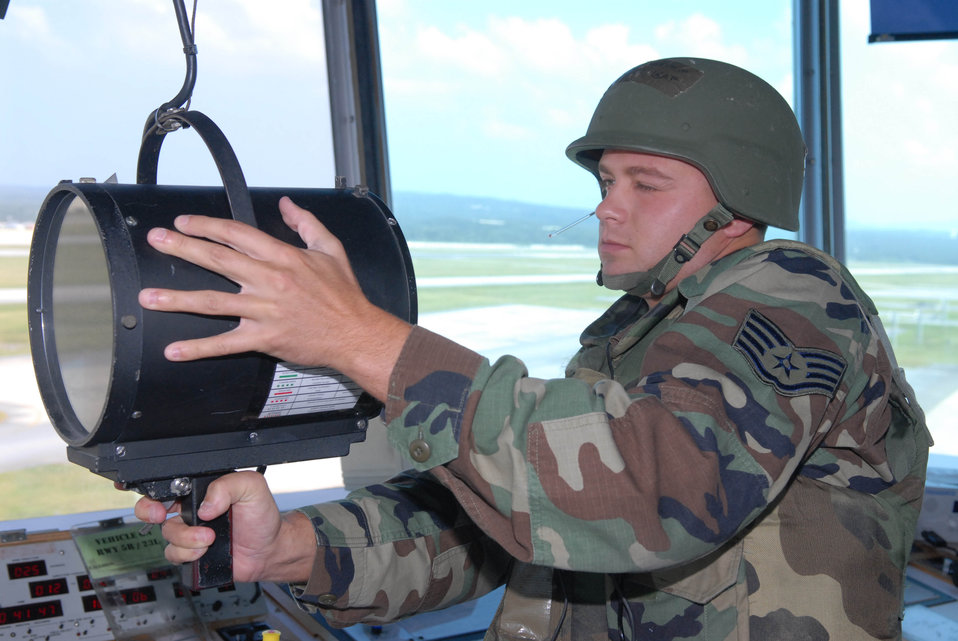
Testing the tower

Staff Sgt. Davis Christopher flashes a light gun signal from the air traffic control tower to approaching aircraft during an exercise Oct. 17 at Kadena Air Base, Japan. The light gun signal is used when an aircraft has lost radio communications with the control tower. The 18th Wing exercise from Oct. 13 to 19 tests the wing's ability to respond to a wartime situation. Sergeant Christopher is assigned to the 18th Operations Squadron.